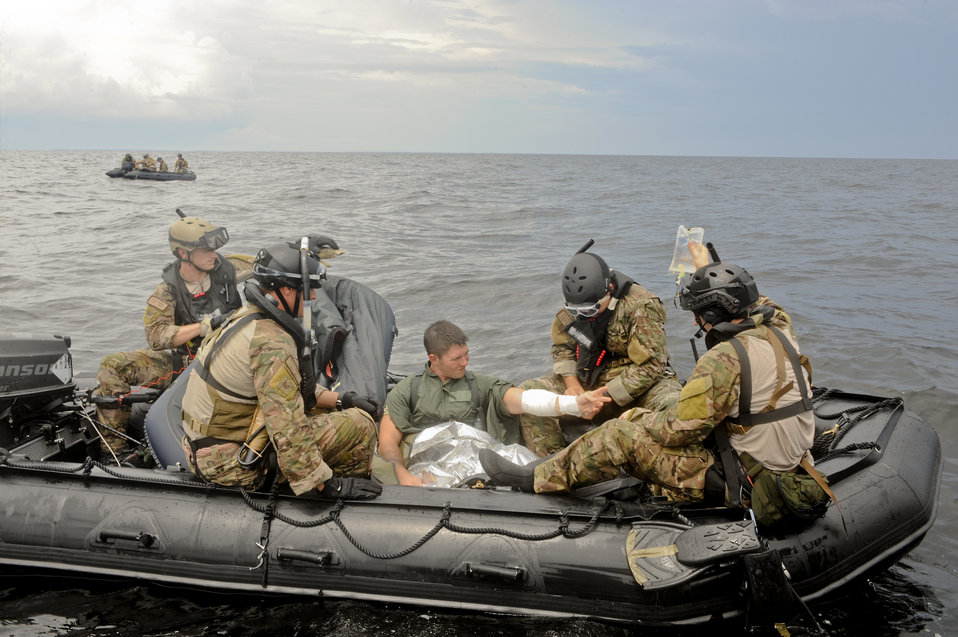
Water rescue

A pararescue team from the 38th Rescue Squadron at Moody Air Force Base, Ga., applies first aid to Senior Airman Rudy Parsons during a water rescue exercise in the Gulf of Mexico on Aug. 14, 2012. To ensure the training was as realistic as possible, the team applied an IV to Parsons despite choppy water conditions. Parsons is with the 38th RQS.